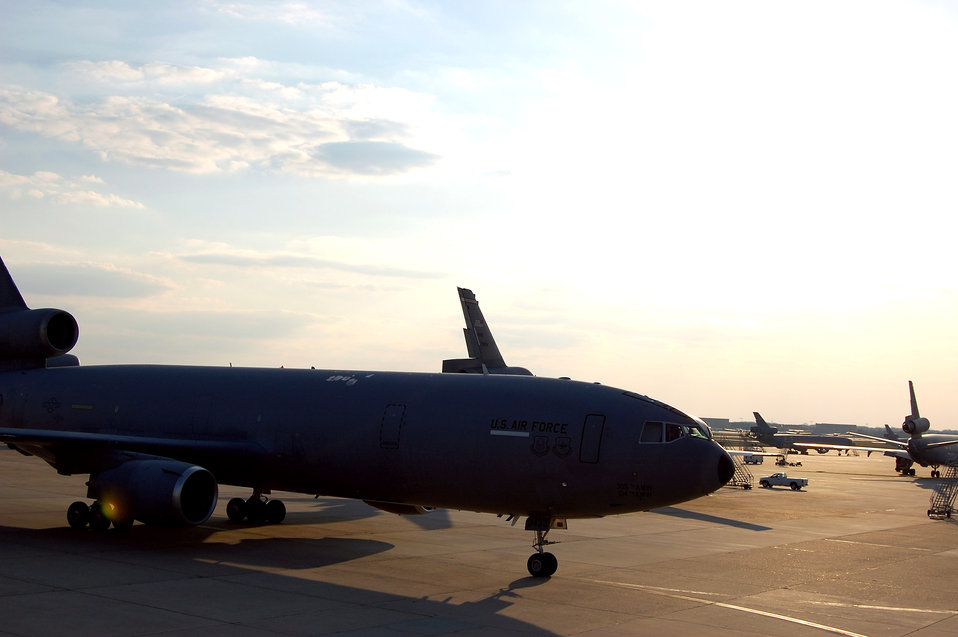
Fuel efficiency among top priorities in AMC's energy conservation

A KC-10 Extender taxies on the flightline en route to an air refueling mission April 9, 2009, at Joint Base McGuire-Dix-Lakehurst, N.J.